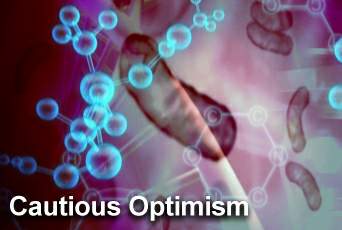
Homeland secretary: Cautious optimism about H1N1 flu

Information from the Centers for Disease Control and Prevention regarding the severity and reach of the H1N1 flu virus is encouraging, said Secretary of Homeland Security Janet Napolitano.